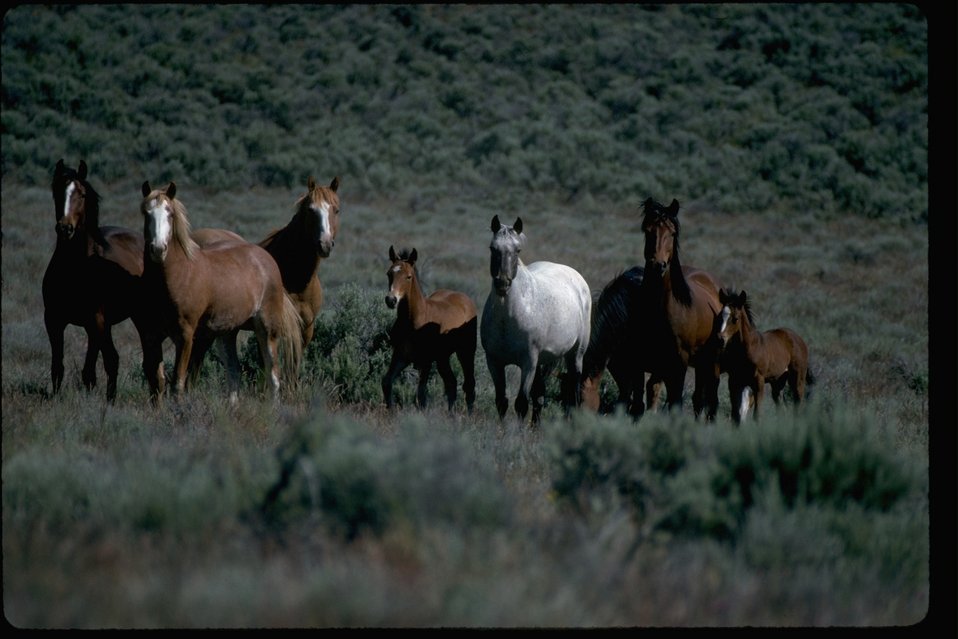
East Warm Springs Herd Management Area with wild horses. Lazarus Band near Burns, Oregon.